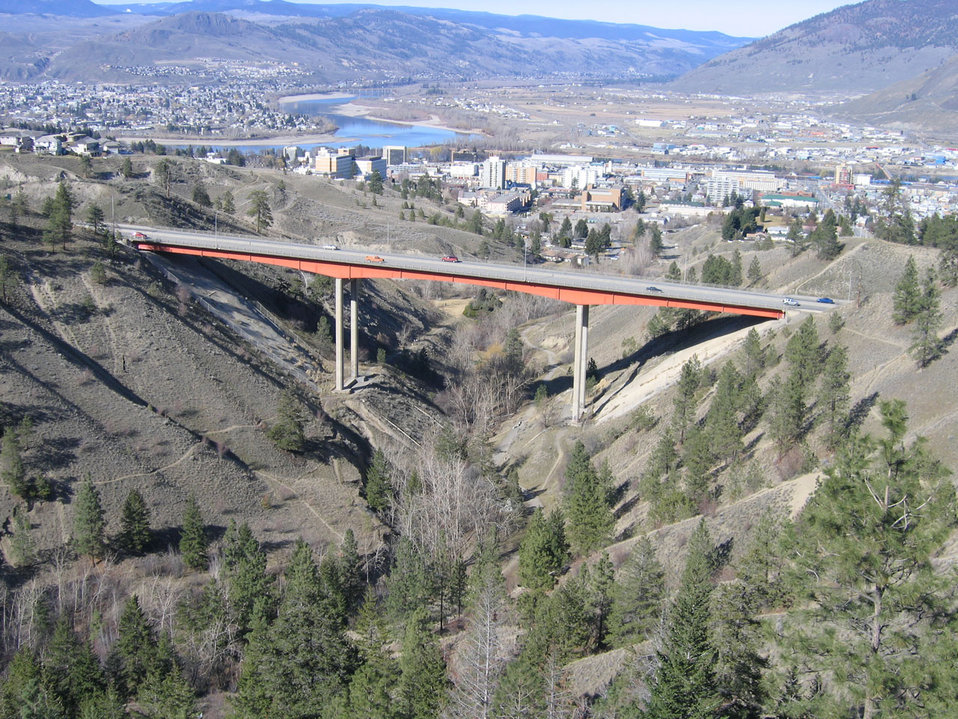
Peterson cr bridge

View of kamloops, bc, canada with peterson cr bridge in foreground.